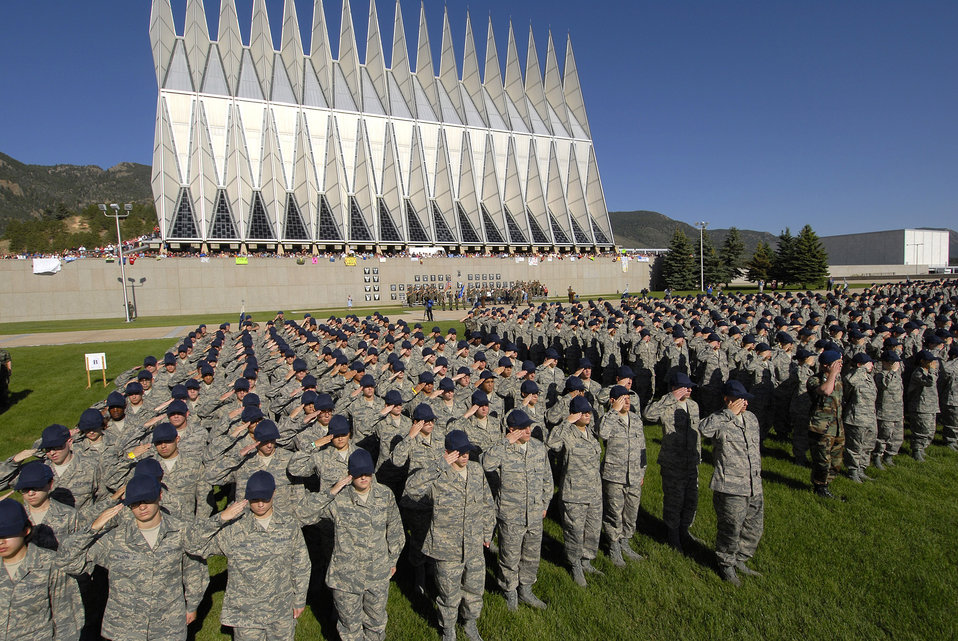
Class of 2012 Arrives

The Class of 2012 salutes during a reveille ceremony on Day Two of the 38 days of Basic Cadet Training June 27 at the U.S. Air Force Academy, Colo. Inprocesing marks the start of 38 days of Basic Cadet Training, which is designed to prepare basic cadet trainees for entry into the cadet wing.